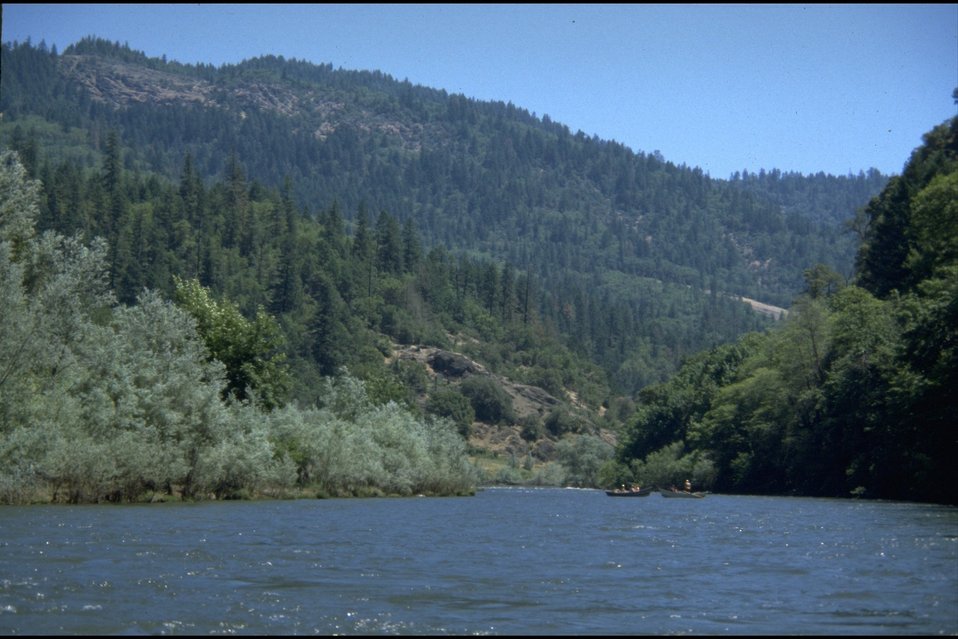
Rogue River; Hellgate Recreation Area.